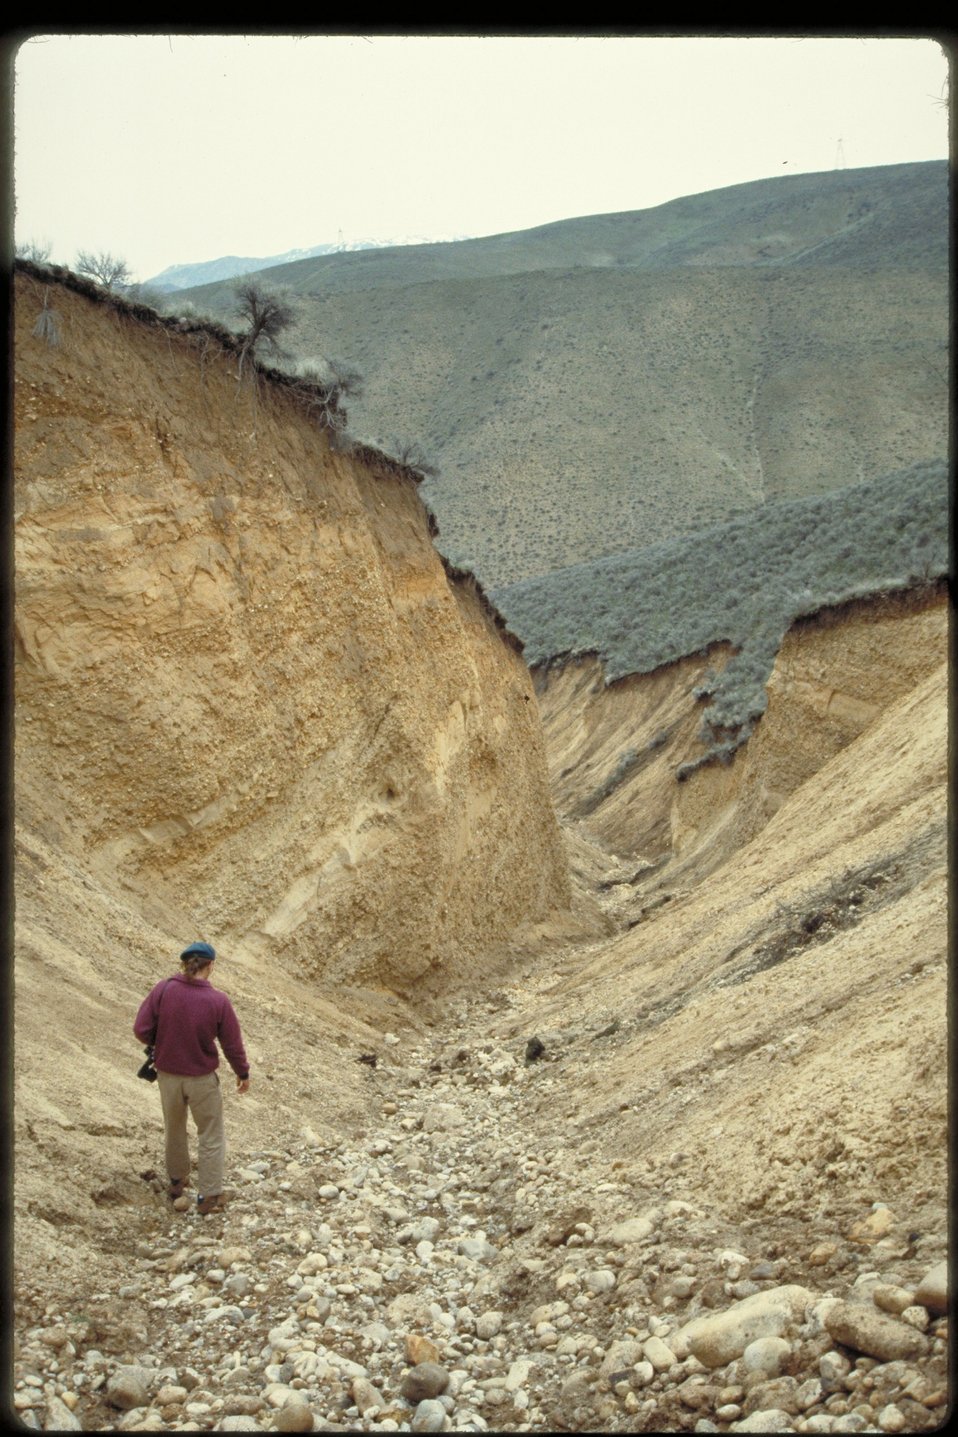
Little Gulch erosion Boise Front Four Rivers Field Office LSRD Lower Snake River District